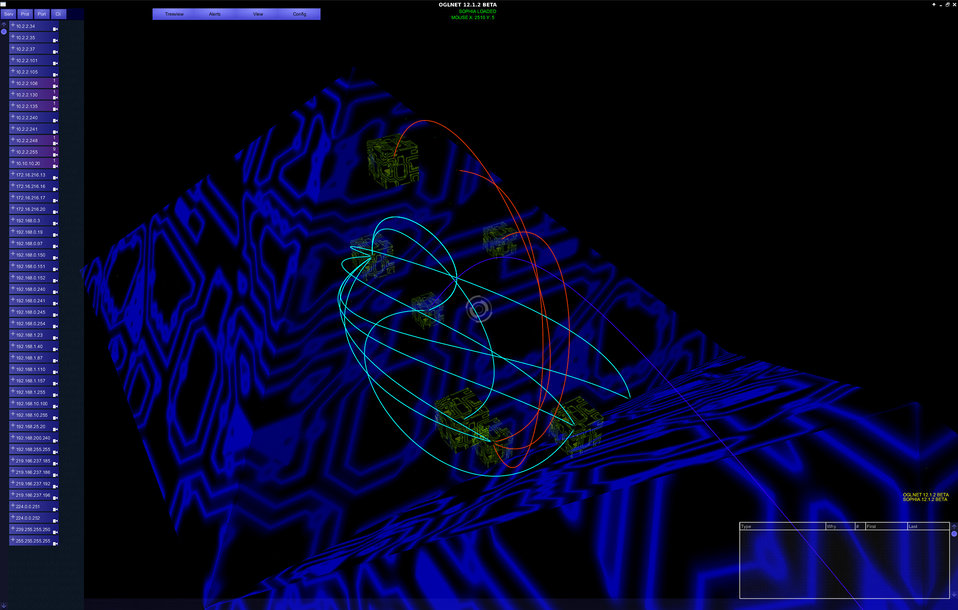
The SOPHIA cyber security software developed at Idaho National Laboratory provides multiple ways for operators to view conversation pathways on their networks.